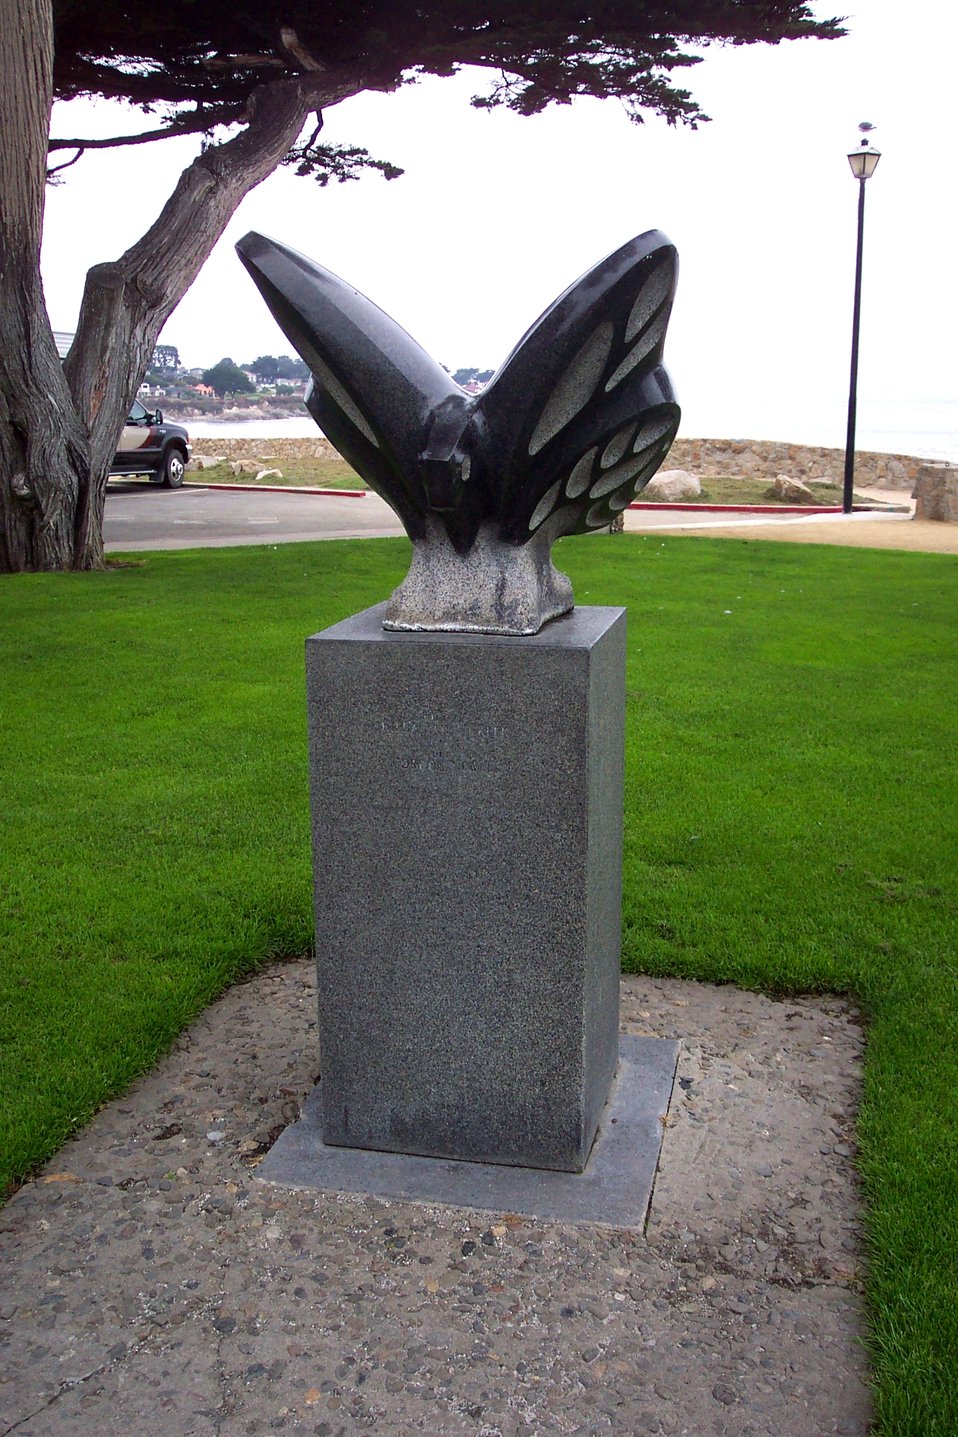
Statue of Monarch Butterfly - Danaus plexippus - at Lovers Point Park in Pacific Grove. Monarch butterflies come to the Monterey Bay area in the fall, winter over, and mate in the spring.